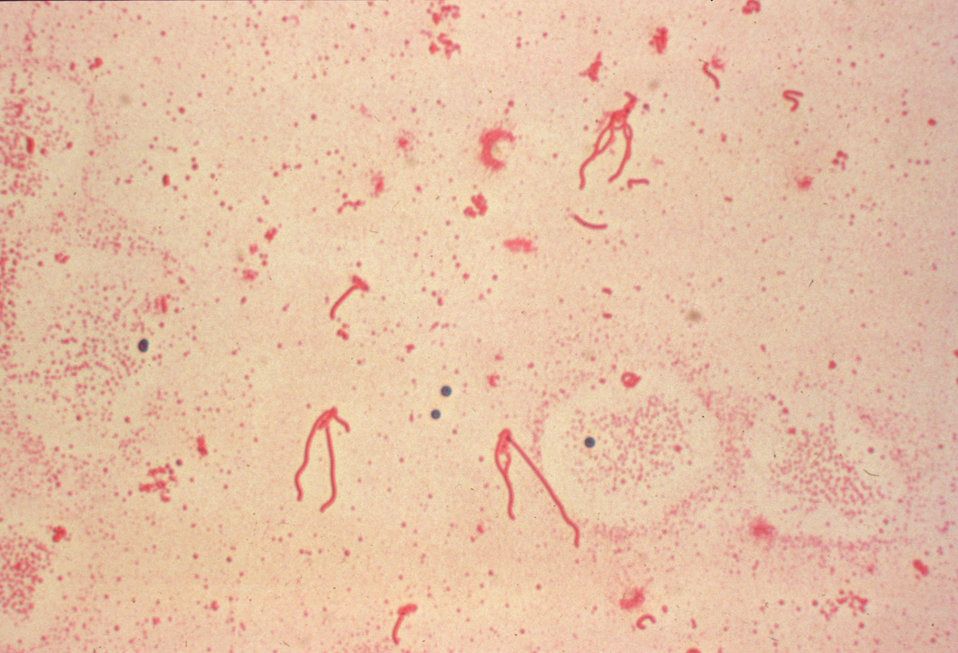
A photomicrograph of Yersinia enterocolitica using Flagella staining technique.